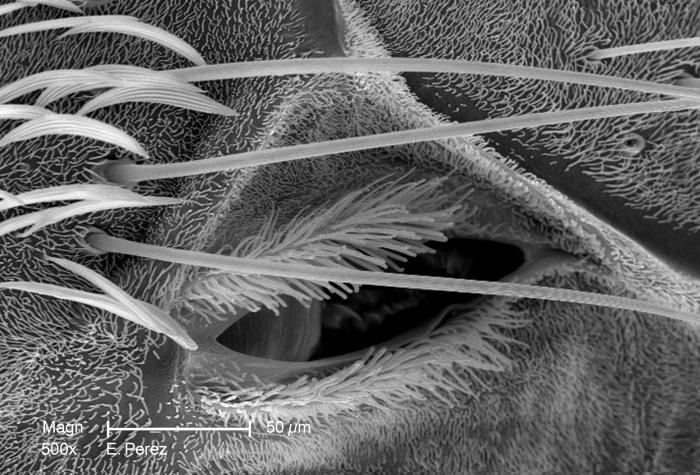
This is the third of four scanning electron micrographs (SEM) that are representative of successively greater magnifications of the thoracic region of an unidentified mosquito discovered in the suburbs of Decatur, Georgia. At a magnification 5X greater than PHIL 10519, and twice that of 10520, this SEM depicts the morphology of this region focusing on the anatomical feature known as the 'spiracle', which is one of two orifices located on the thorax through which the insect breaths. Note that PHIL 10522 is at an even greater magnification of the spiracle. There are eight additional spiracles located on the abdominal region as well. You'll also note the presence of numerous setae, or sensorial 'hairs', as well as many light-weight scales, all of which are composed of the same material as the exoskeleton itself, a substance known as chitin.